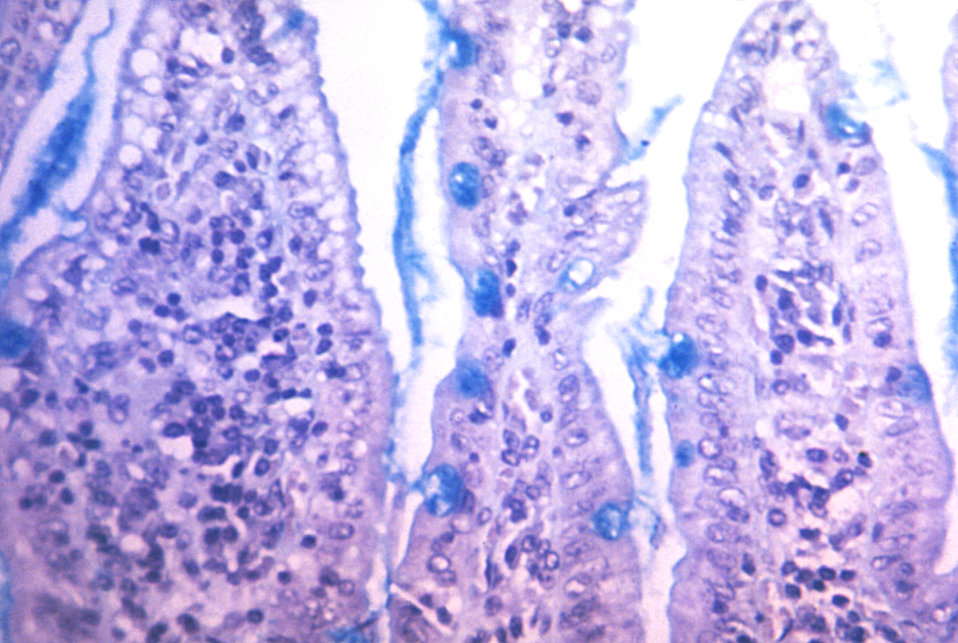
Vibrio cholerae causing increased mucous production seen in this intestinal biopsy.